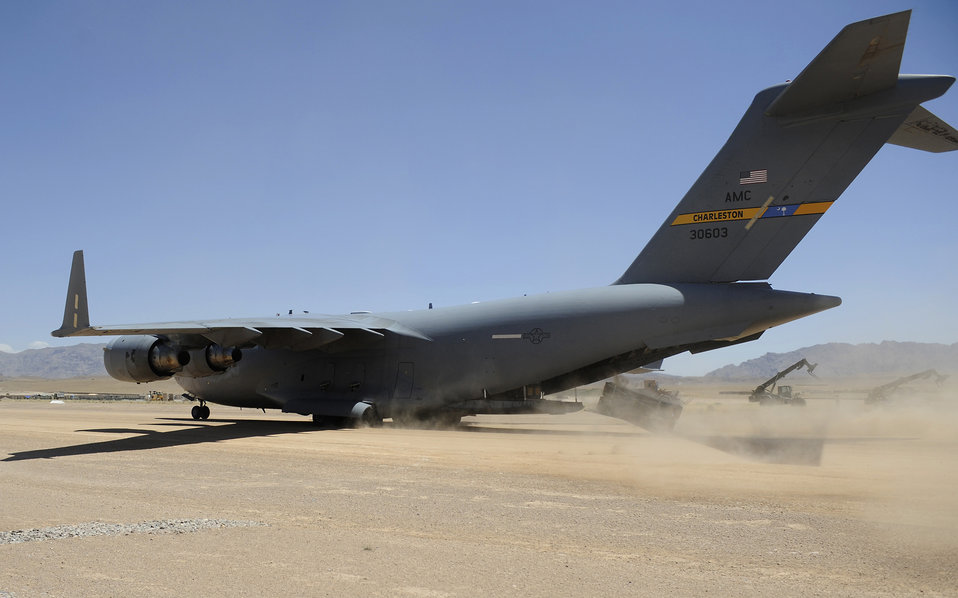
C-17 uses combat offload

A pallet is combat offloaded from a C-17 Globemaster III June 20, at Tarin Kowt Airfield, Afghanistan. Members of the 816th Expeditionary Airlift Squadron conducted a combat offload.